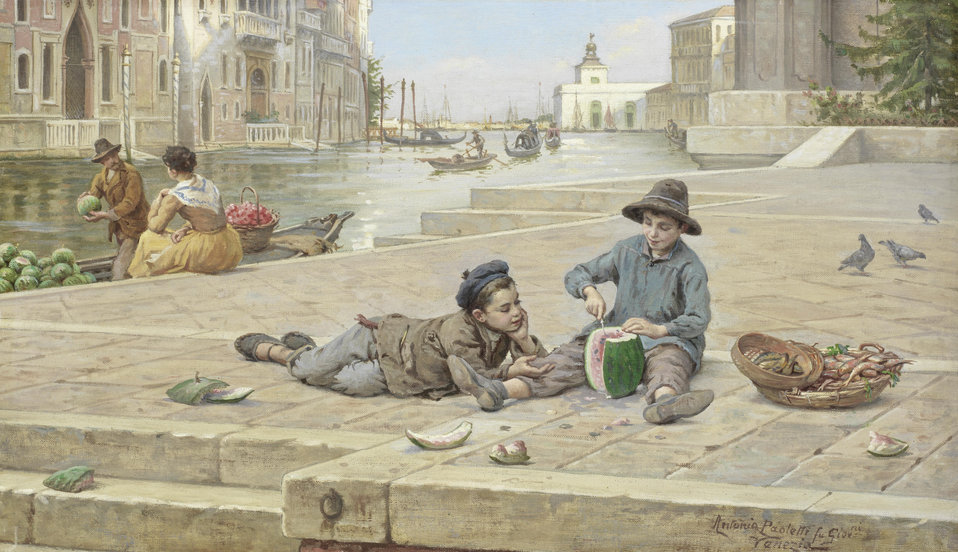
Antonio Ermolao Paoletti The melon sellers